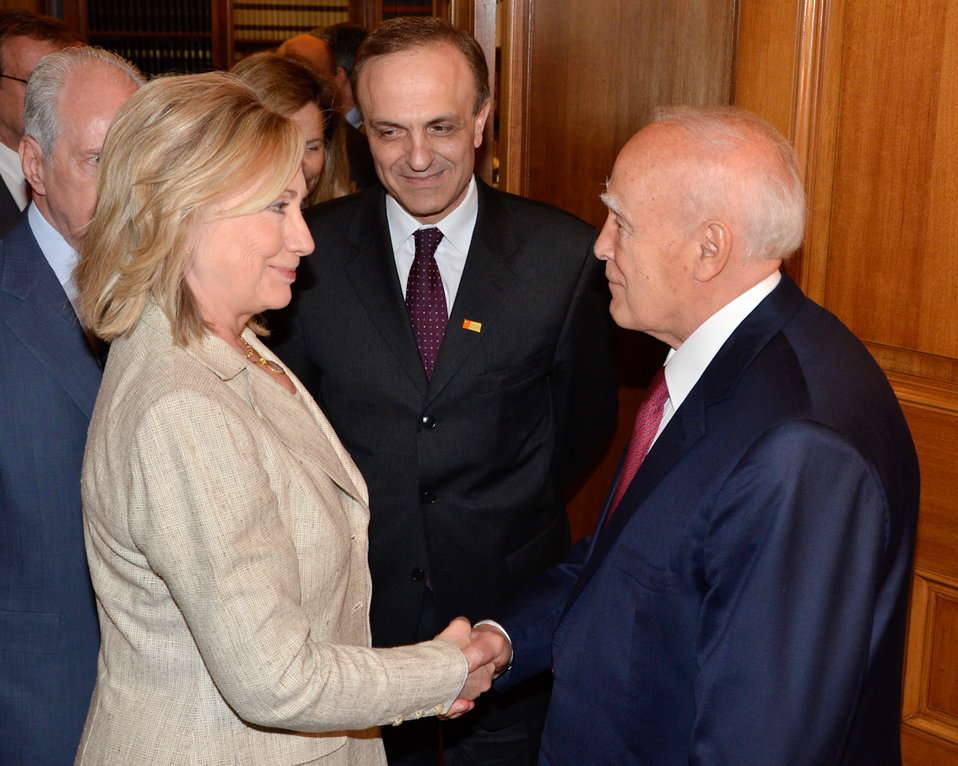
Secretary Clinton Shakes Hands With Greek President Papoulias

U.S. Secretary of State Hillary Rodham Clinton shakes hands with Greek President President Karolos Papoulias in Athens, Greece, on July 17, 2011.